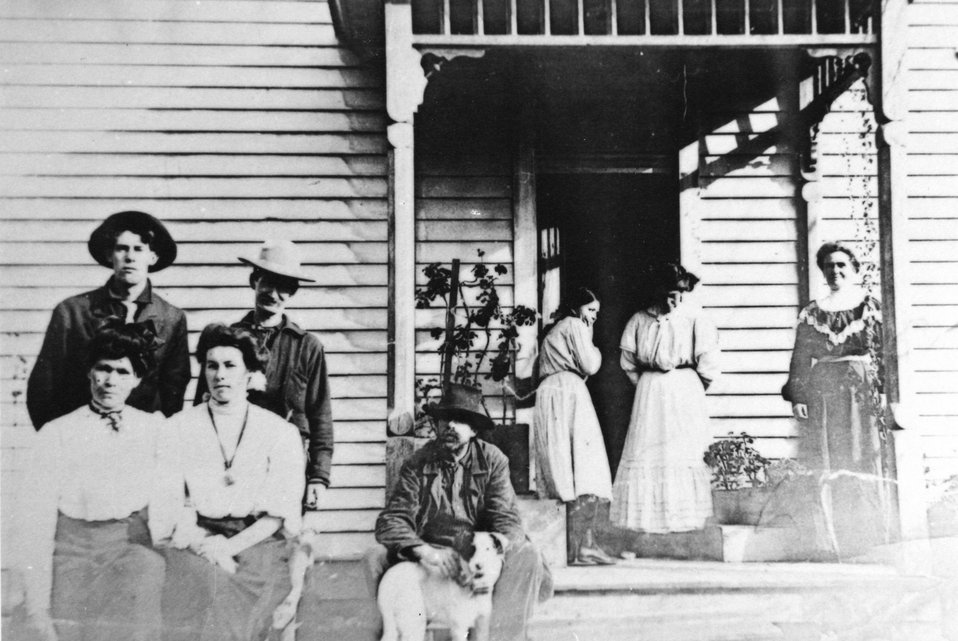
Porch at George Billing's ranch at Mule Creek. Annie Billings at right, Marial next to her and Alpine in door. Susan Billings is seated at left.